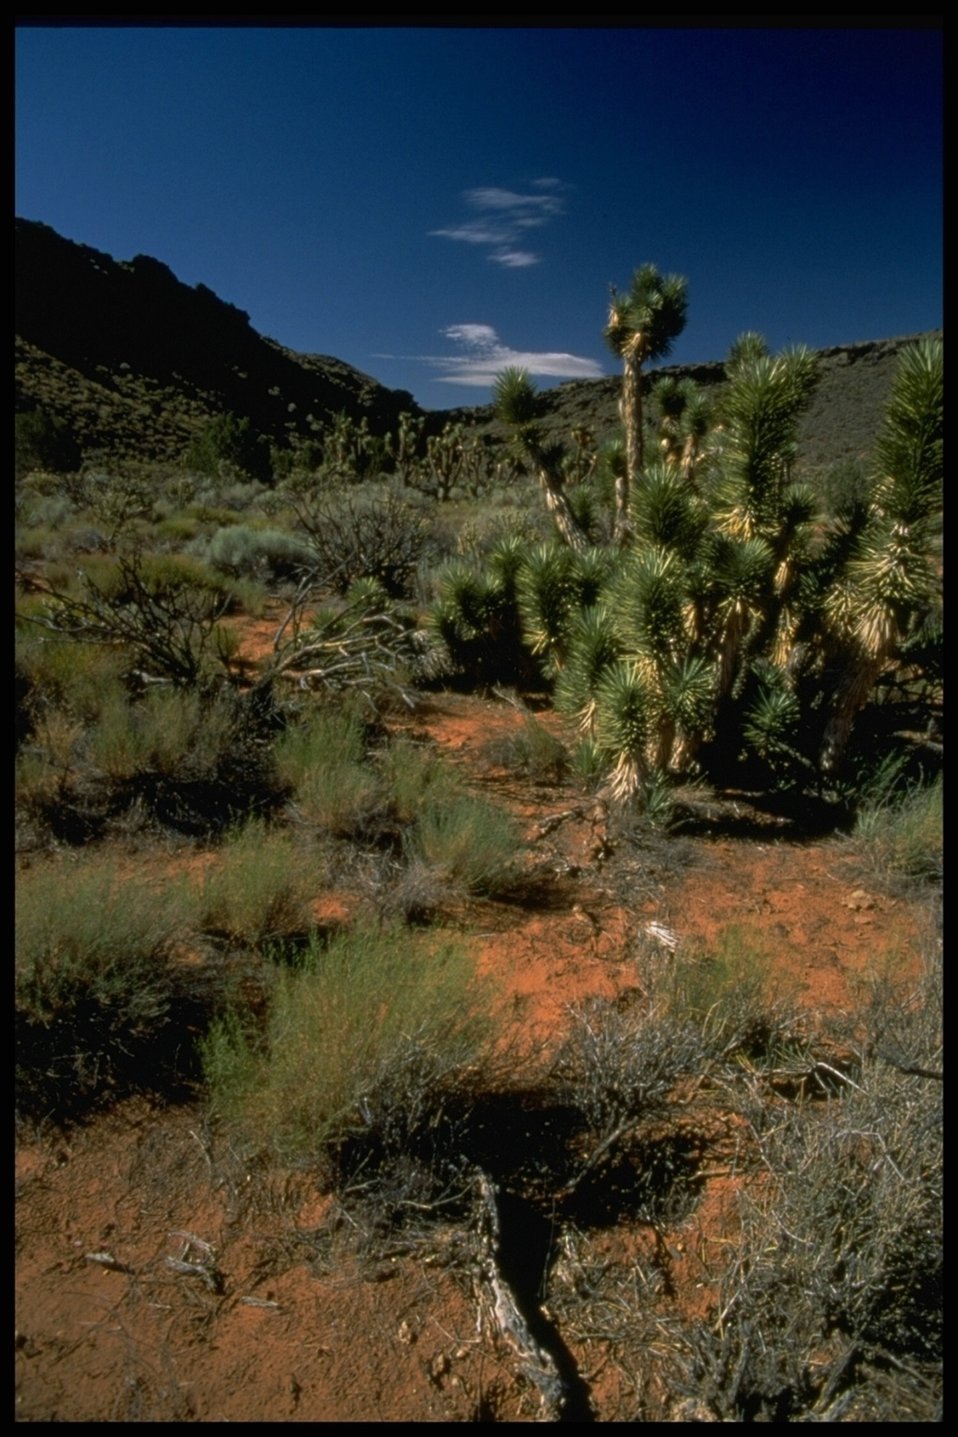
Two Mountains from a valley in the background of this picture with cacti and other desert plants in the foreground.